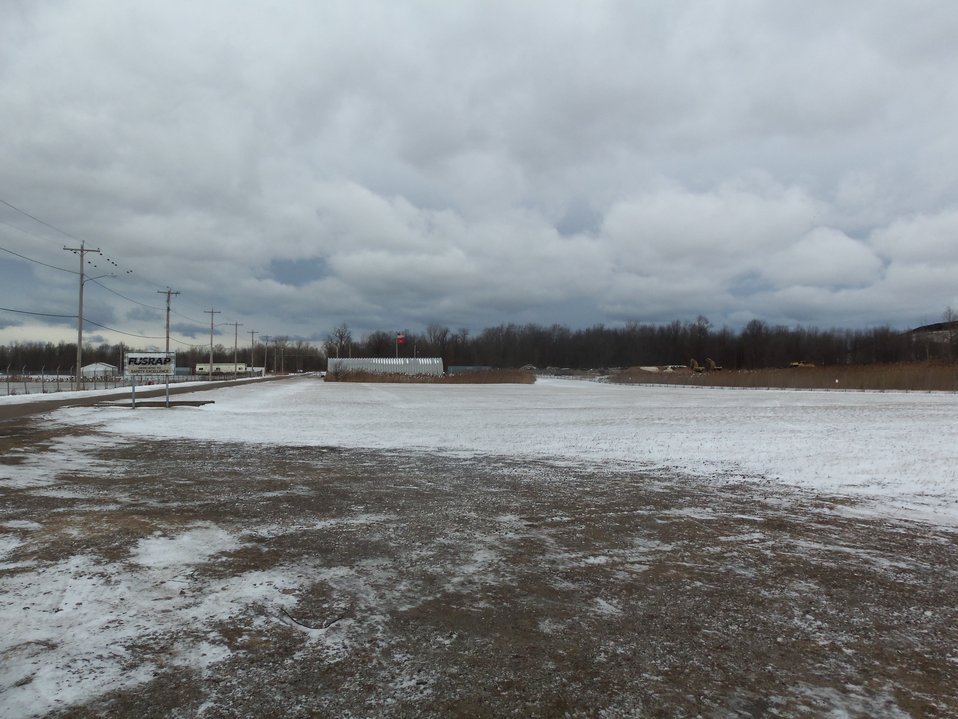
PHOTO OF AREA WHERE BUILDING 401 STOOD

Activities from the Niagara Falls Storage Site, which is associated with the former Lake Ontario Ordnance Works. Formerly Utilized Sites Remedial Action Program (FUSRAP), a program initiated in 1974 to identify, investigate and clean up or control sites that were part of the Nation's early atomic energy and weapons program. Activities at the sites that are eligible for FUSRAP were conducted by Manhattan Engineer District (MED) or the Atomic Energy Commission (AEC), both predecessors of the Department of Energy (DOE). The U.S. Army Corps of Engineers was assigned management of FUSRAP by Congress in 1997.